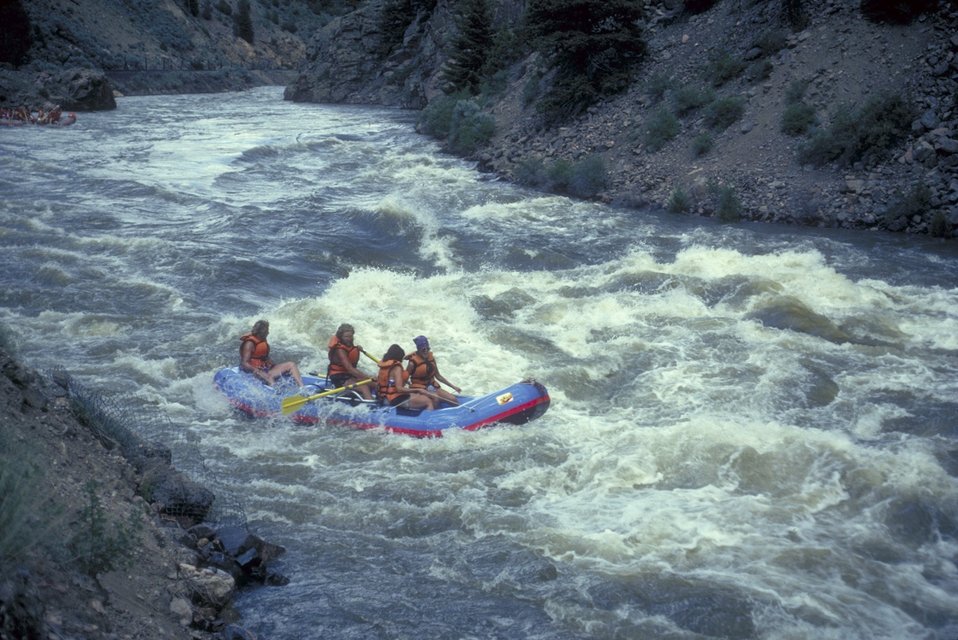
Rafting along the Upper Colorado River.